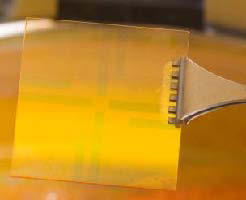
'Conductive ink' solar panels capture sun power for servicemembers

Plexcore® technology, depicted here, allows solar cells to form-fit servicemembers' uniforms to power GPS components and communication devices, and could also be used to